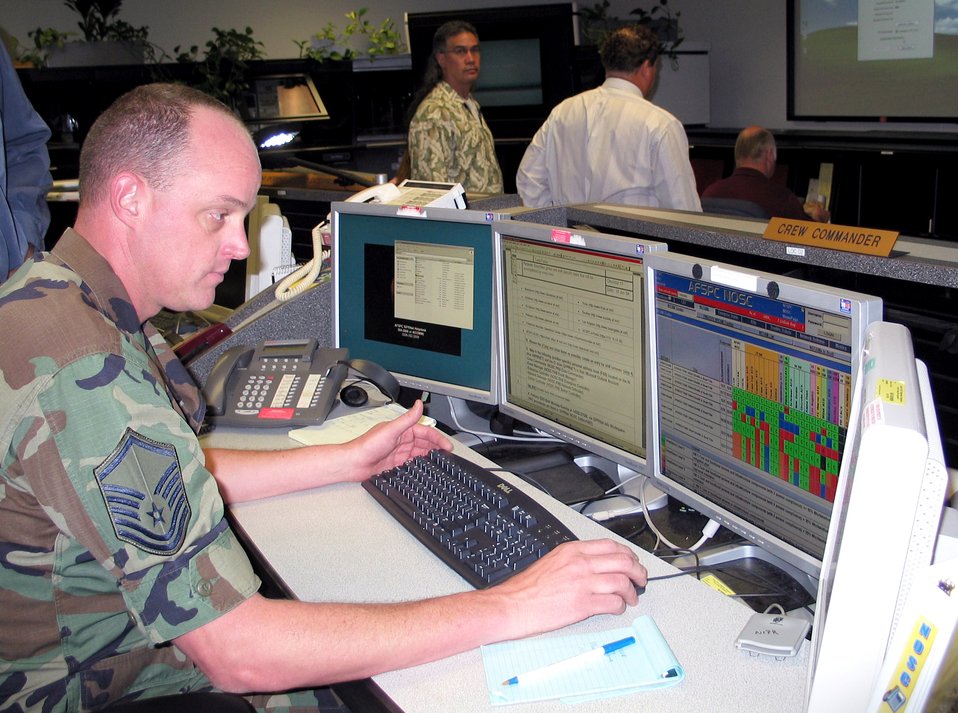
Space command creates one focal point for networks

Master Sgt. Pete Norris reviews information on the Air Force Space Command major command coordination center, or MCCC, display at Peterson Air Force Base, Colo., on Thursday, June 1, 2006. The display facilitates tracking of mission system compliance with all security software updates. Sergeant Norris is a crew commander assigned to the new MCCC.